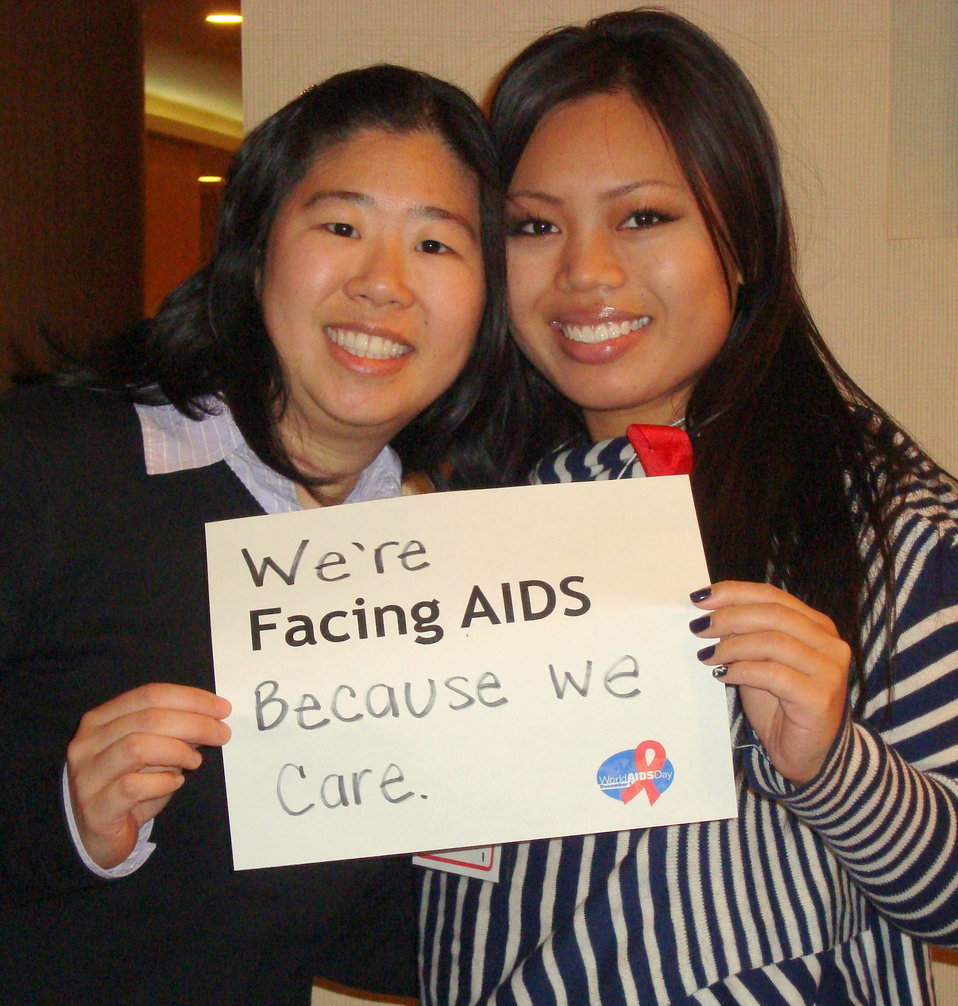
FacingAIDSCampaign 018